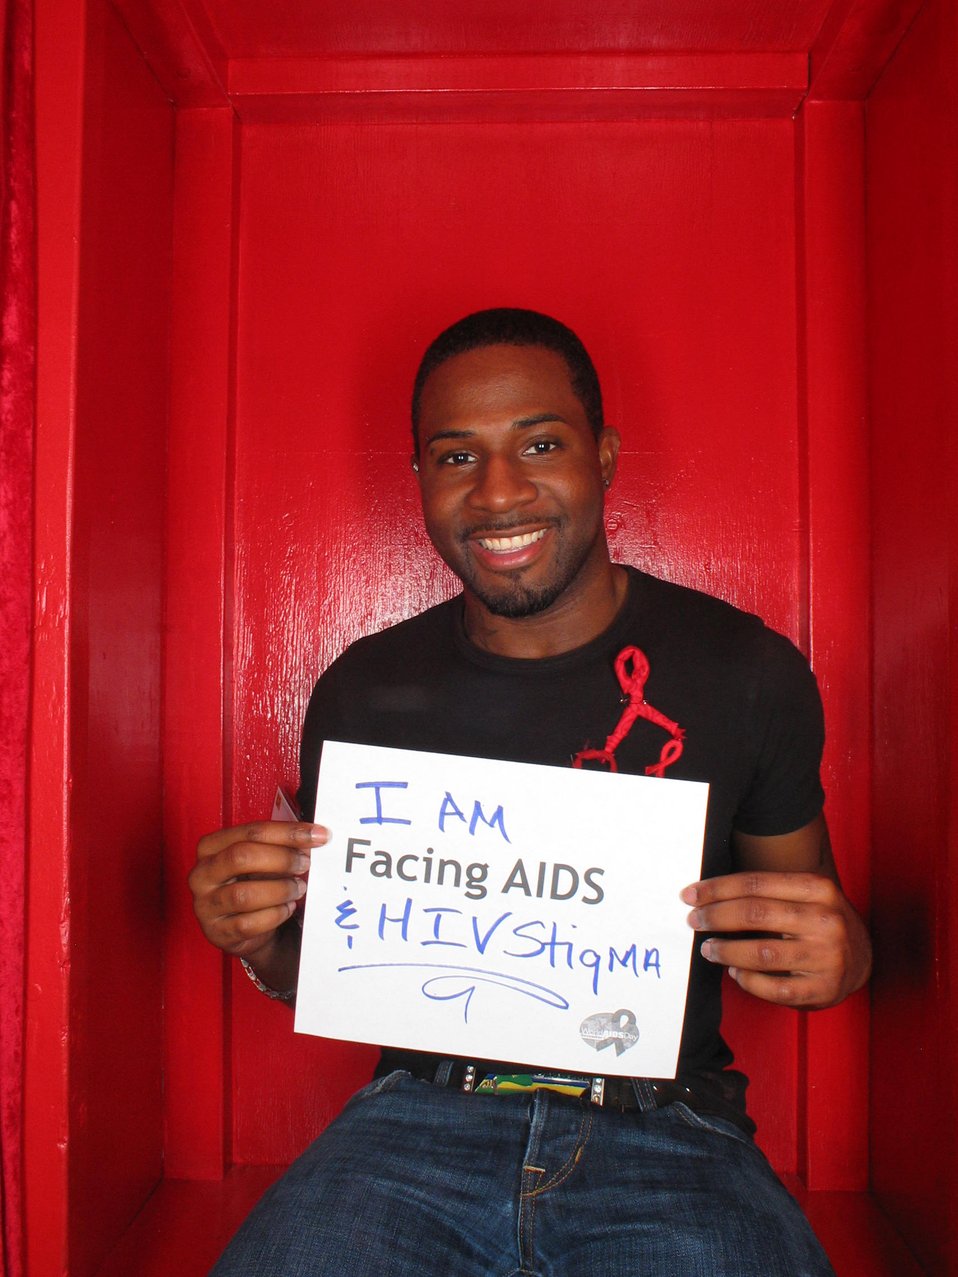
I am Facing AIDS and HIV stigma